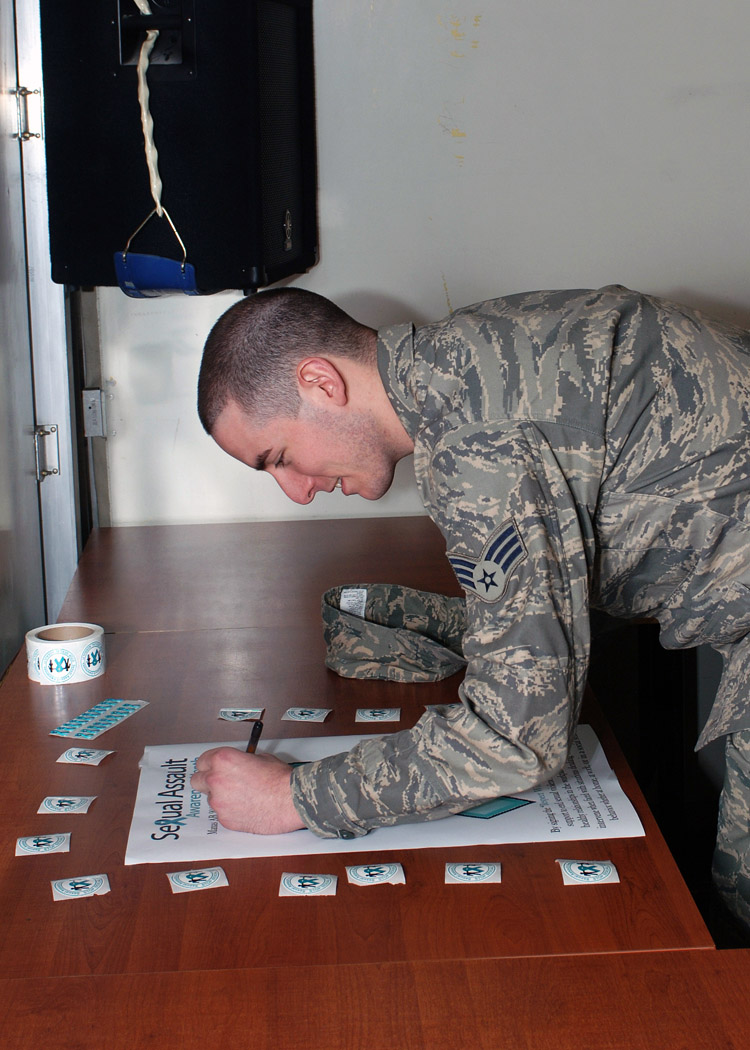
Manas members pledge to stop sexual assault before it starts

Senior Airman Christopher Morris signs a sexual assault awareness poster after attending a workshop for the National Sexual Assault Awareness Month day of action April 8 at Manas Air Base, Kyrgyzstan. During the